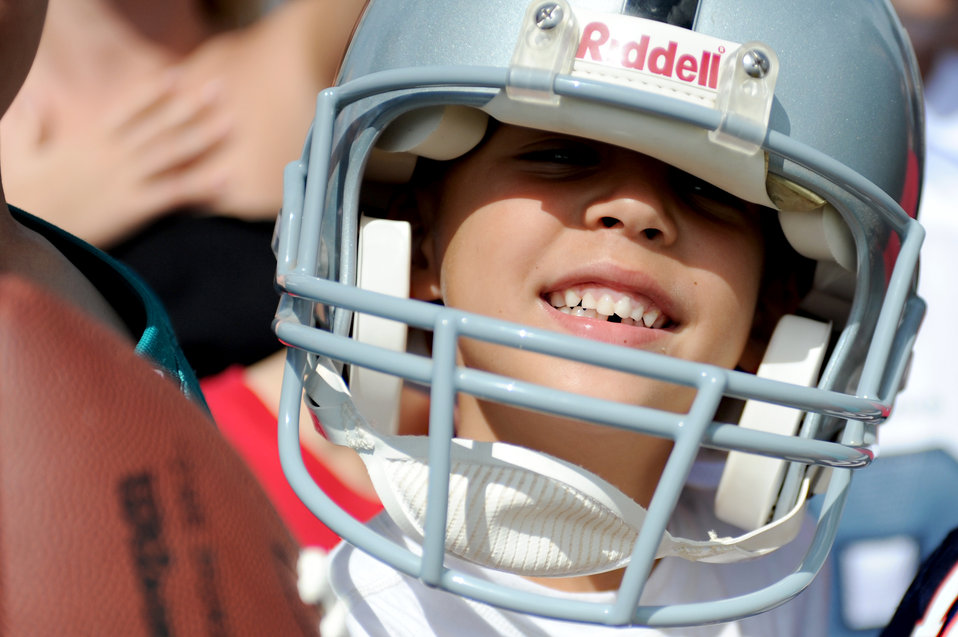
Looking to get signed

A young football fan wears his Oakland Raiders helmet in hopes that one of the professional football players would walk over and sign it for him during the Pro Bowl practice Jan. 26, 2012, at Earhart Field on Joint Base Pearl Harbor-Hickam, Hawaii. Hundreds of service members and their families gathered at the field with the same hopes by bringing a grocery list of sports memorabilia.